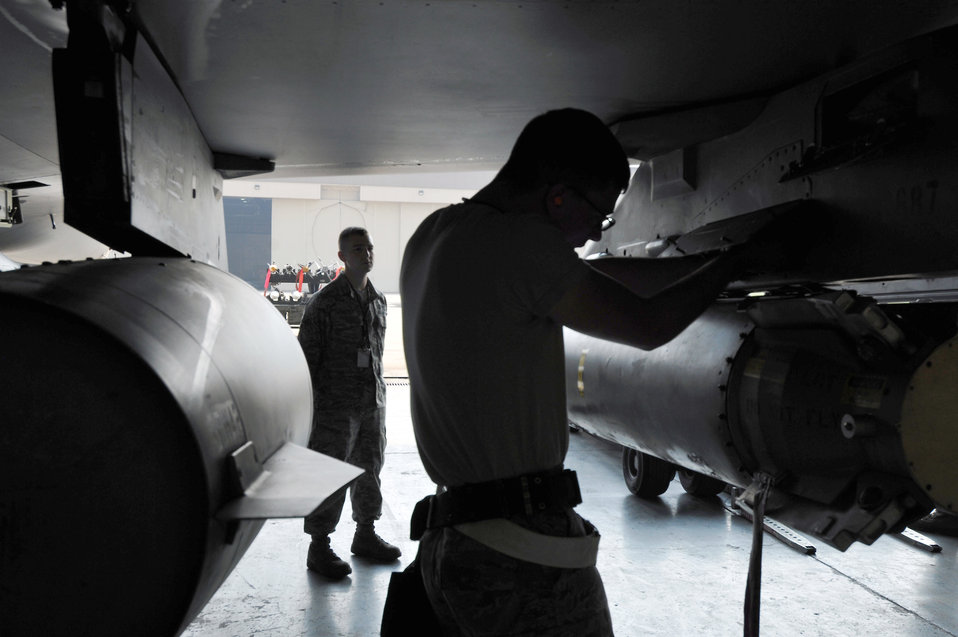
Load crew evaluation

Members of a load crew participate in an evaluation June 28, 2011, at Kunsan Air Base, South Korea.